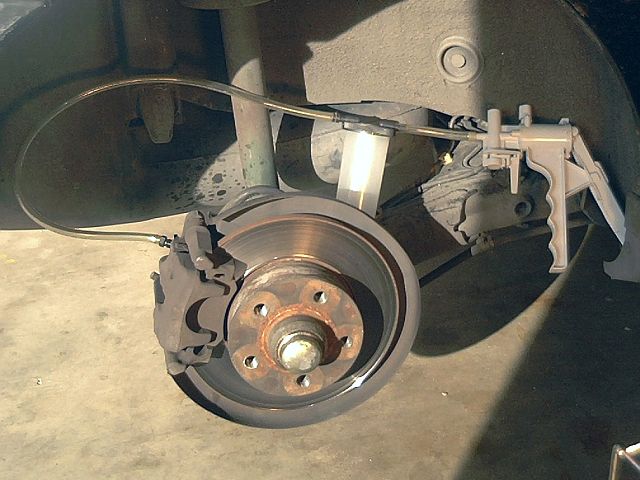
My picture of vacuum bleeding the brake system